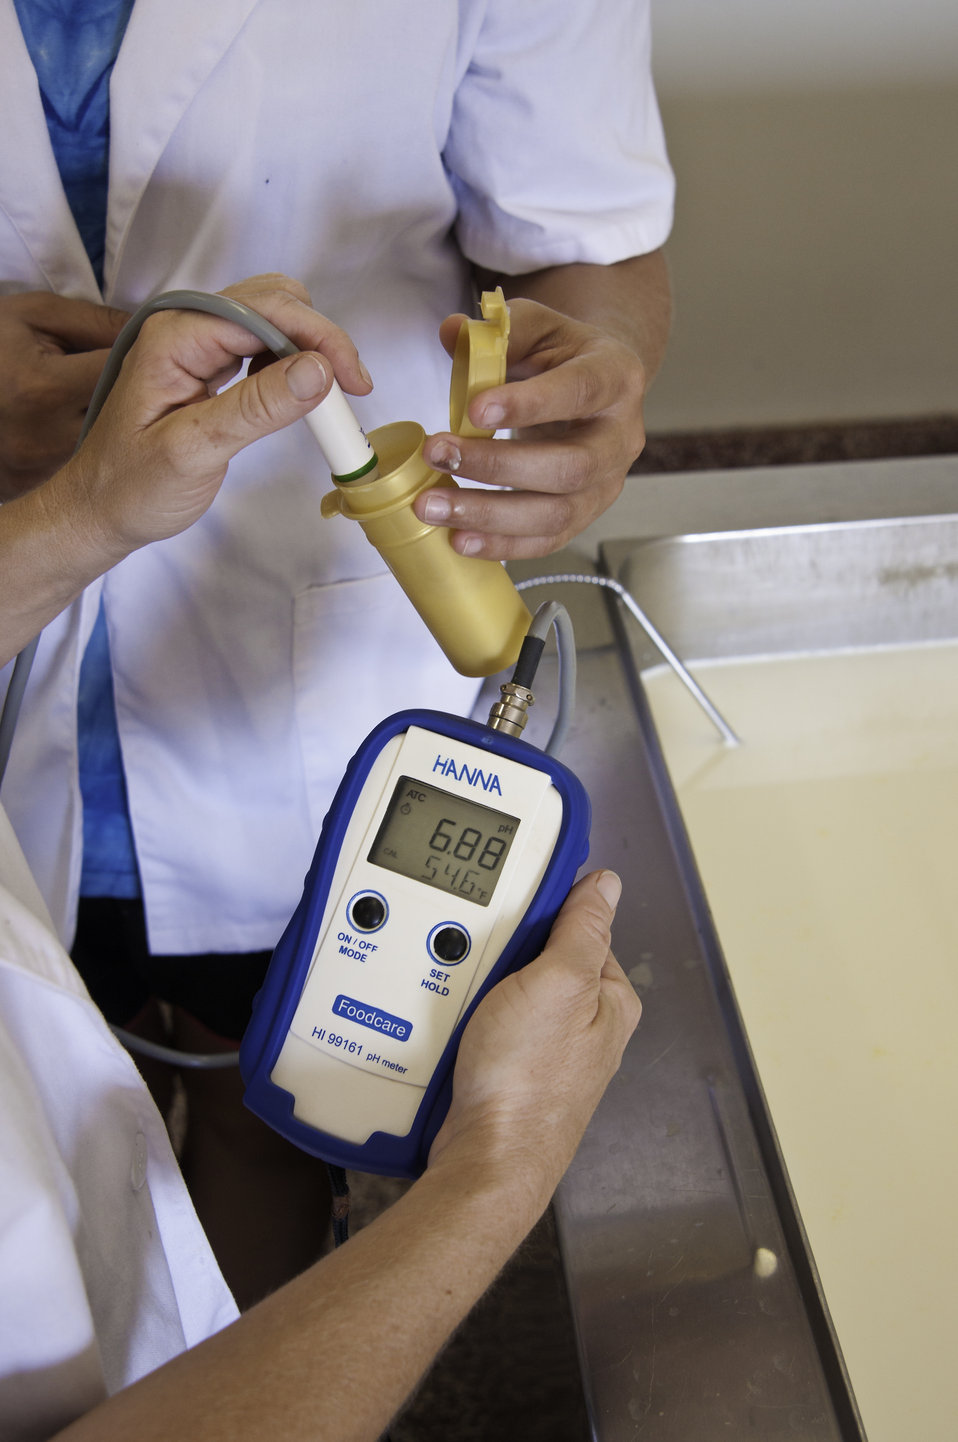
Chapel’s Country Creamery owner Holly Foster and Chapel’s Country Creamery farm manager Courtney Biggs in Easton, MD check the PH of fresh raw milk used to produce artisanal cheeses at the dairy. The dairy uses fresh raw milk 12-24 hours old. The milk is all-natural and contains no synthetic hormones, antibiotics, or chemical compounds. The 1150 pounds of milk in the vat will be used to make the dairy’s “Bay Blue” Cheese.